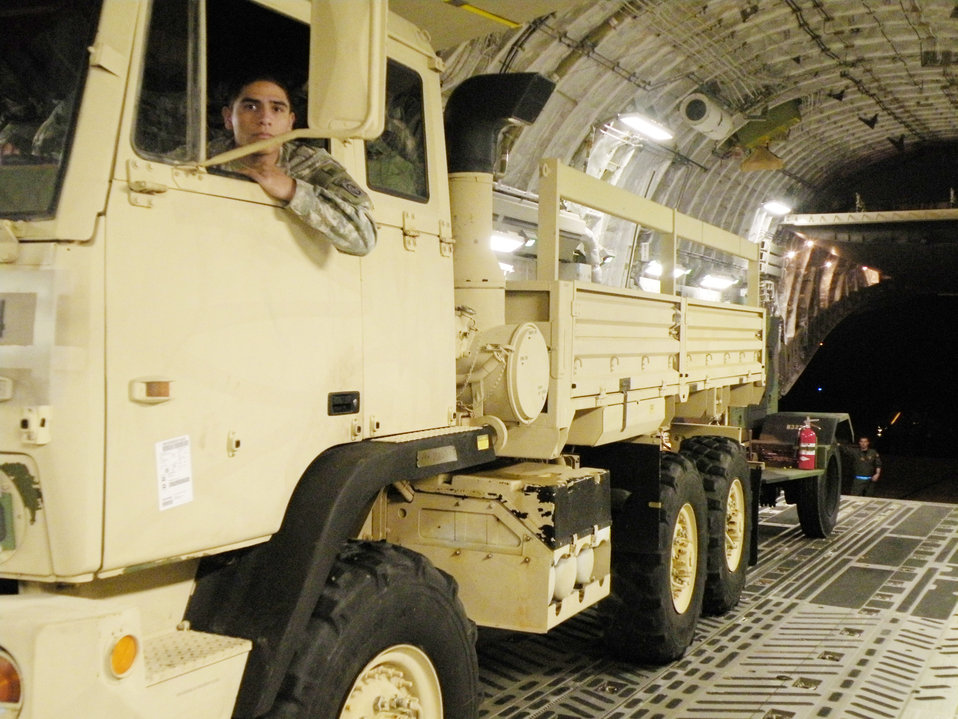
Total-force crews support Operation Unified Response in Haiti

A Soldier from Fort Bragg, N.C. looks out his rear-view mirror as Staff Sgt. Gus Morse guides him and his vehicle out the back of a C-17 Globemaster III after landing in Haiti in support of Operation Unified Response during the early morning hours of Jan. 22, 2010. Sergeant Morse is a 317th Airlift Squadron loadmaster from Charleston Air Force Base, S.C.